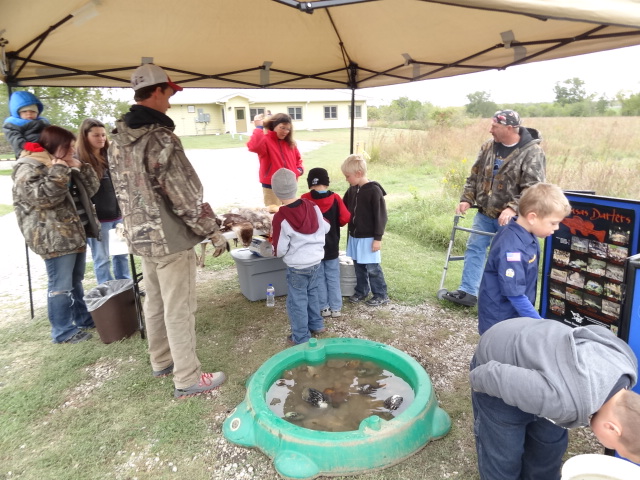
Touch Table and Tank